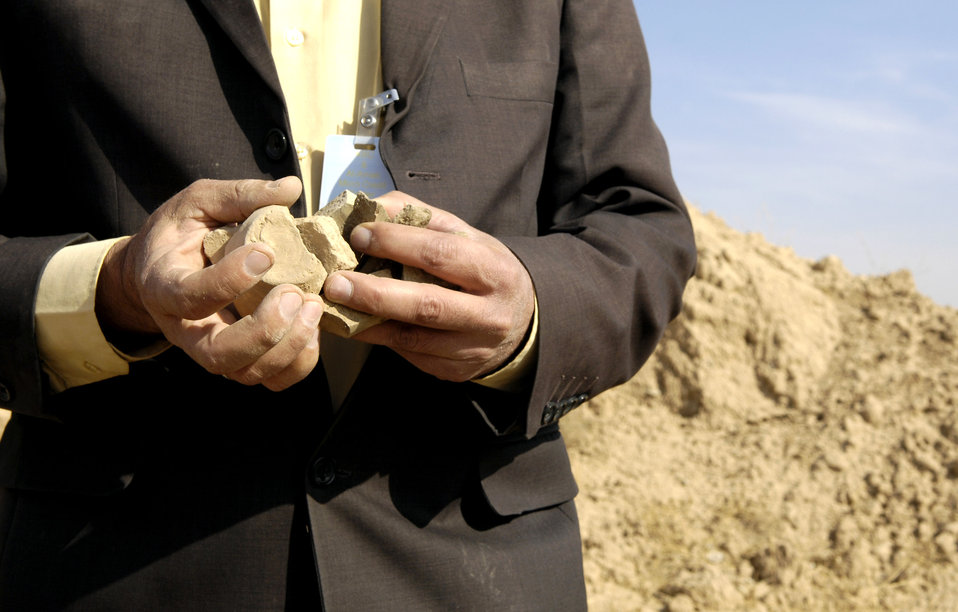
Deployed Airmen find ancient artifacts at Iraqi air base

Iraqi archeologist S.M. Ameen holds some pottery artifacts he found Dec. 26 at one of four Kirkuk Air Base, Iraq, construction sites. Artifacts were first discovered by civil engineering Airmen while grading an area near the flightline. Mr. Ameen is the assistant curator at the Kirkuk Museum.